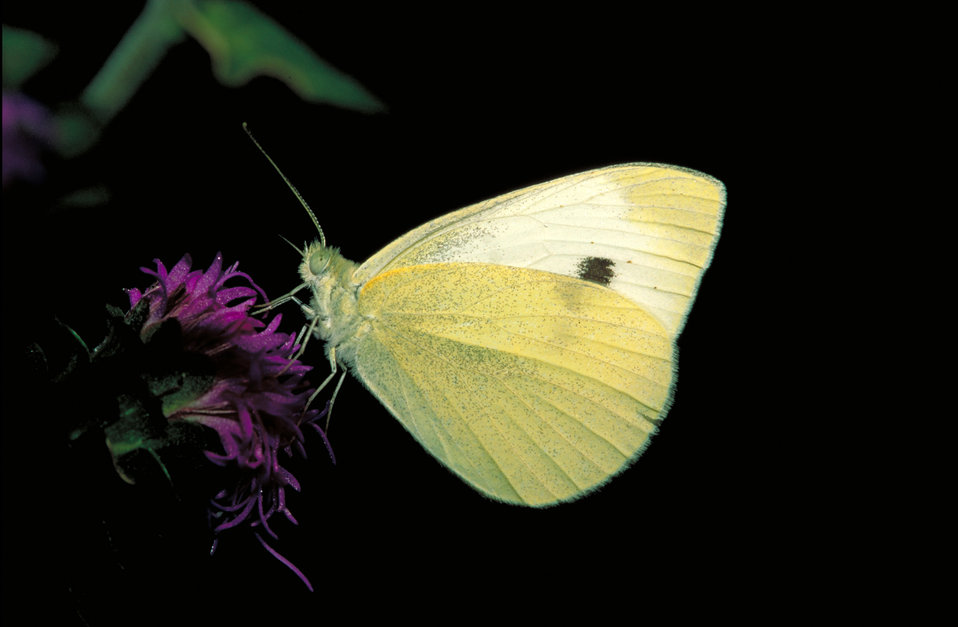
Cabbage White butterfly on Rough blazingstar

Light yellow and white butterfly with light brown spot on wing, sitting on purple bloom, viewed from the side with wings upright.